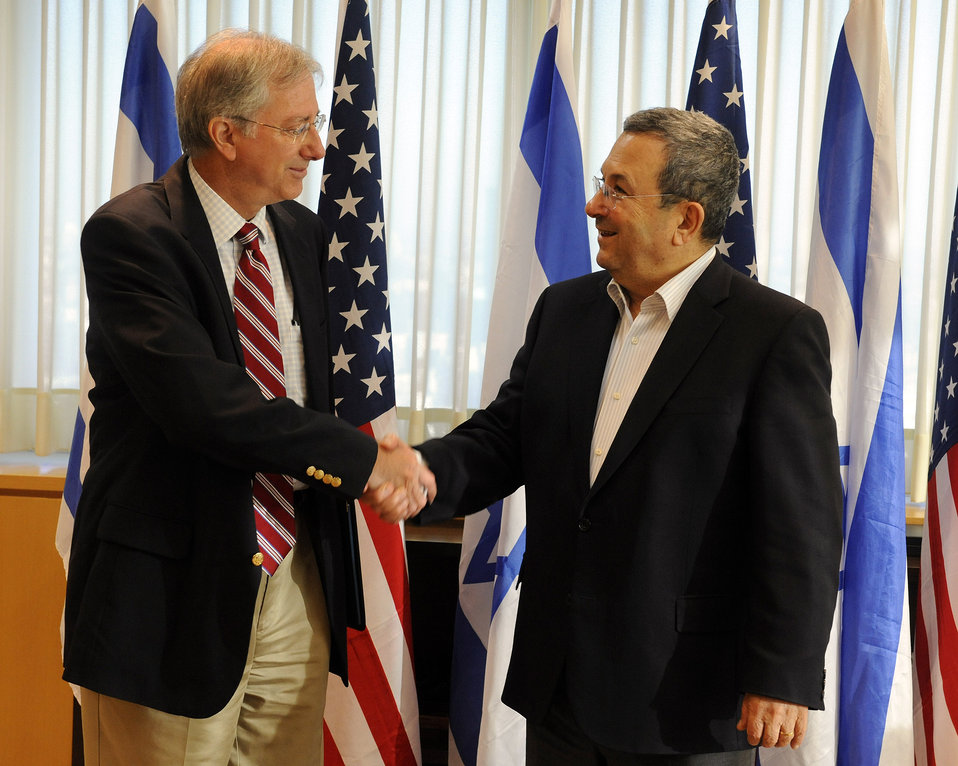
Special Assistant to the President Ross Shakes Hands With Israeli Defense Minister Barak

U.S. Special Assistant to the President and Director for the Central Region at the National Security Council Dennis Ross shakes hands with Israeli Defense Minister Ehud Barak after their meeting at the Israeli Ministry of Defense in Tel Aviv, Israel, on August 5, 2010.